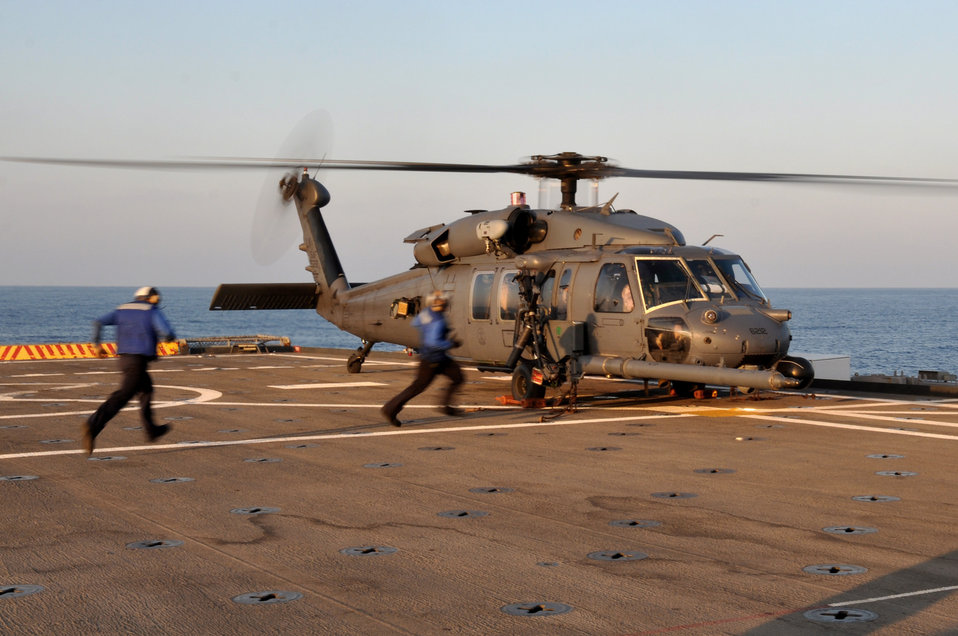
56th Rescue Squadron Flight Ops

110325-N-7293M-274 MEDITERRANEAN SEA (Mar. 25, 2011) Aviation Support Equipment Technician Airman Riley Tanner (left) and Aviation Boatswain?s Mate (Handler) Airman David Singh run to remove the chocks and chains securing a U.S. Air Force HH-60G Pave Hawk from the 56th Rescue Squadron so it can take off from amphibious transport dock USS Ponce (LPD 15) during evening training operations. Elements of the 56th Rescue Squadron, which is based out of RAF Lakenheath, England, embarked aboard Ponce to provide search and rescue coverage for pilots enforcing the no-fly zone over Libya. Ponce is part of Kearsarge Amphibious Ready Group, supporting maritime security operations and theater security cooperation efforts in the U.S. 6th Fleet area of responsibility.